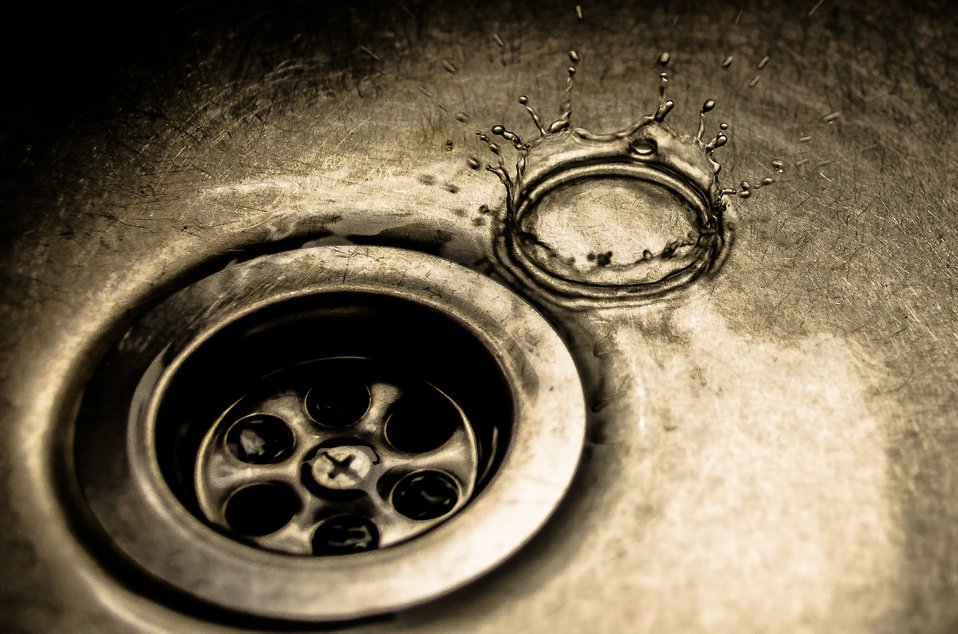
Water in the sink.